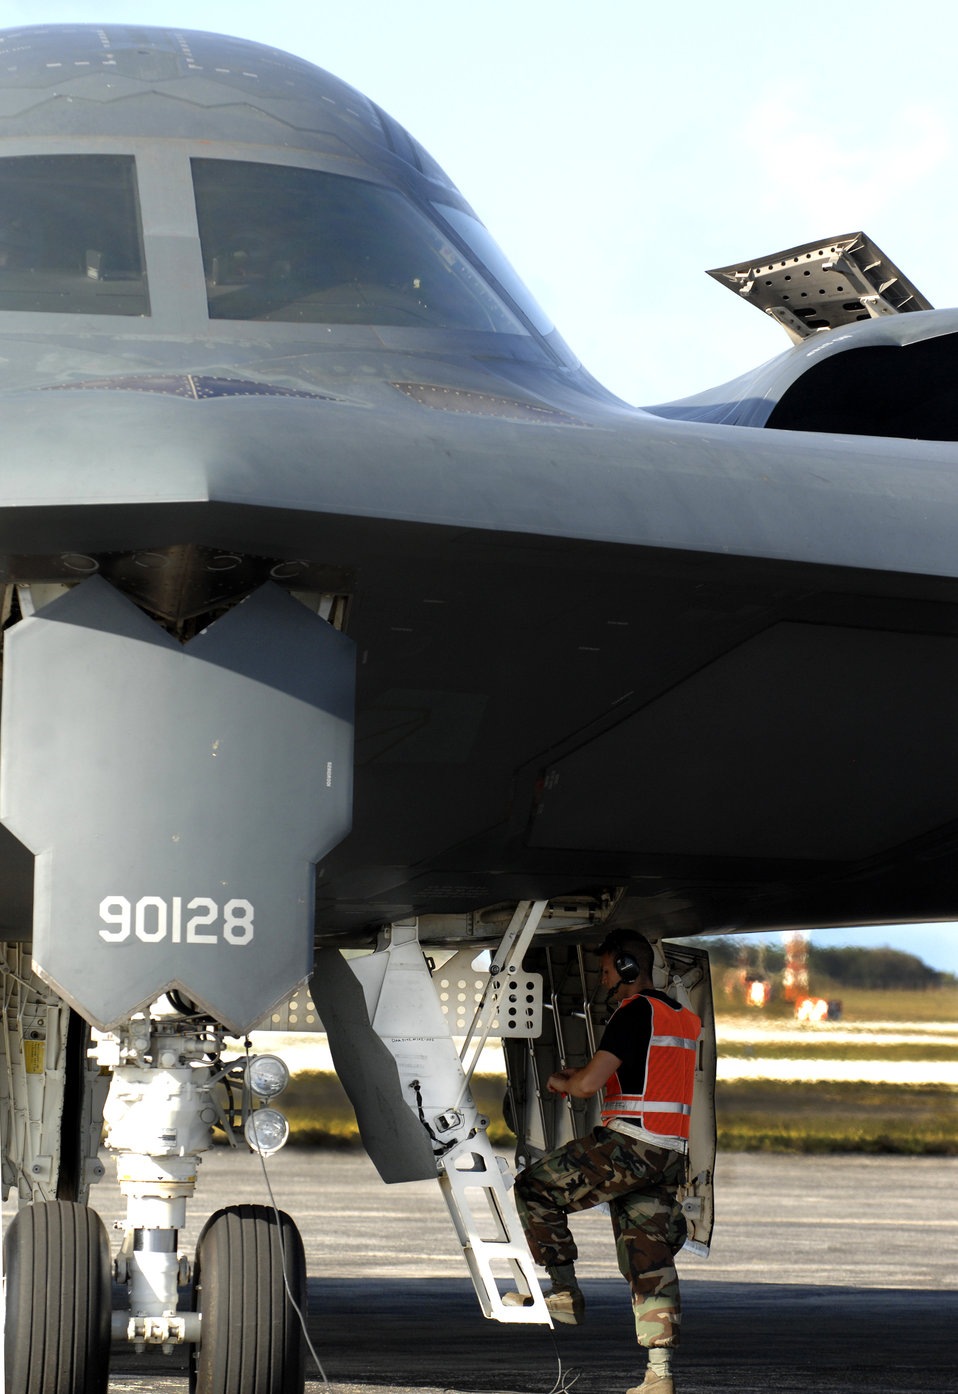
B-2 aircrew participates in exercise in Pacific

Airman 1st Class Joshua Silva prepares to help launch a B-2 Spirit during Exercise Polar Lightning March 12 at Andersen Air Force Base, Guam. B-2s are deployed here from Whiteman AFB, Mo., as part of a regularly scheduled air and space expeditionary force rotation to the Pacific. Airman Silva is a 36th Expeditionary Maintnenance Squadron crew chief.